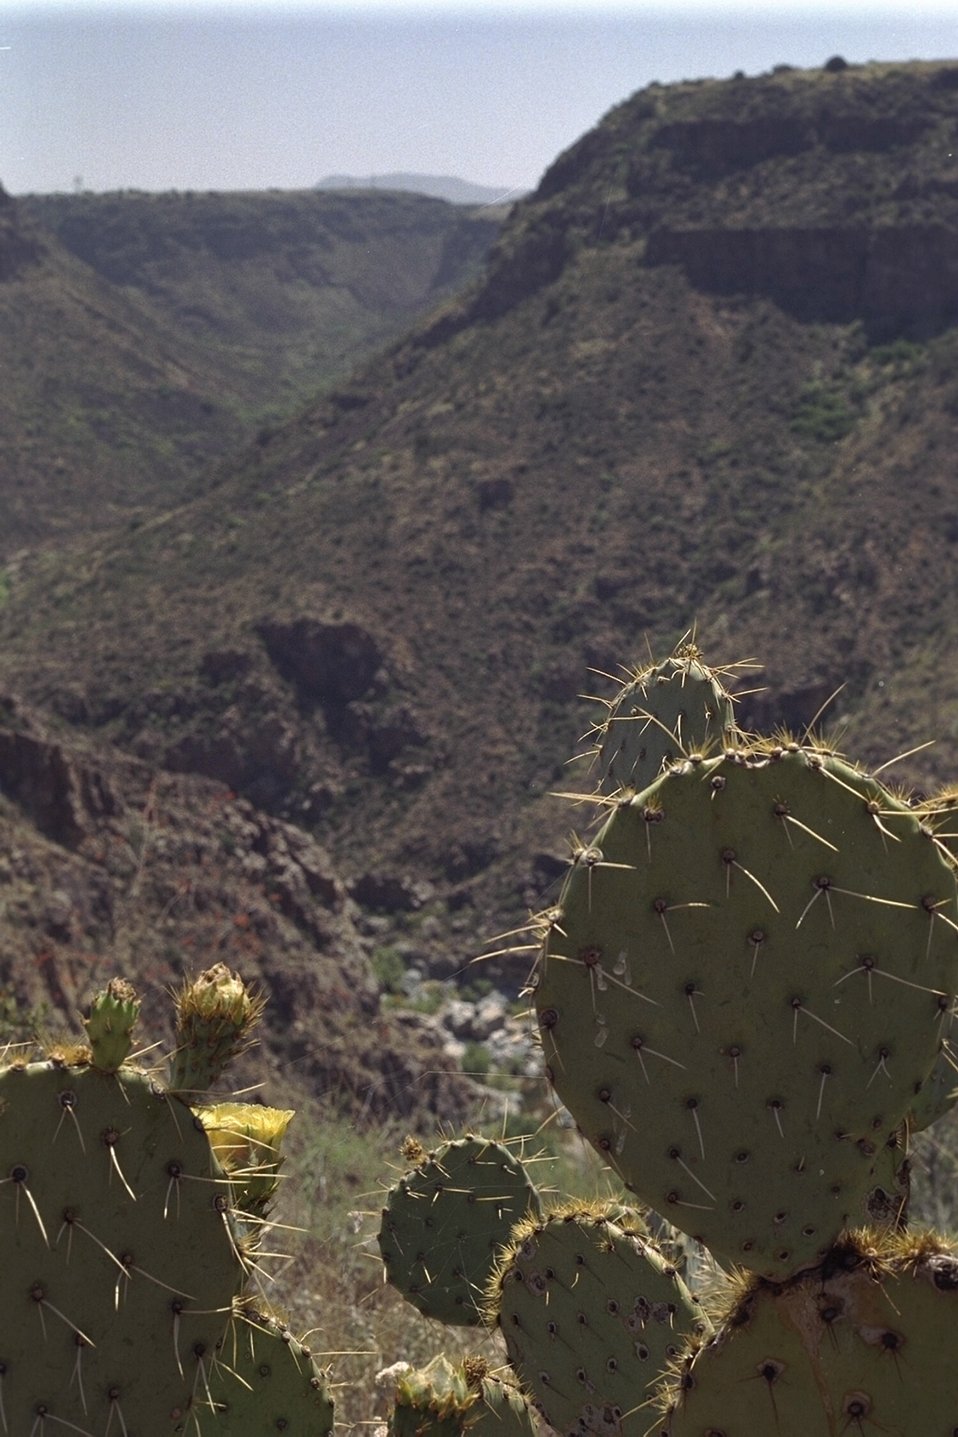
Prickly Pear in focus with Canyon Background out of focus.